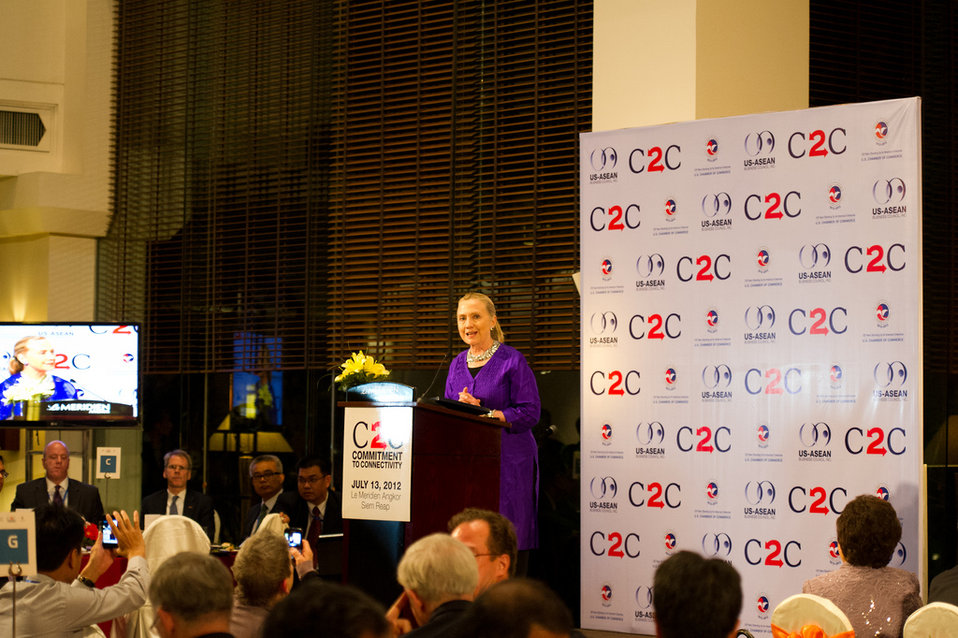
Secretary Clinton Delivers Remarks at U.S.-ASEAN Business Forum and Dinner

U.S. Secretary of State Hillary Rodham Clinton delivers remarks at the U.S.-ASEAN Business Forum and Dinner in Siem Reap, Cambodia, on July 13, 2012.